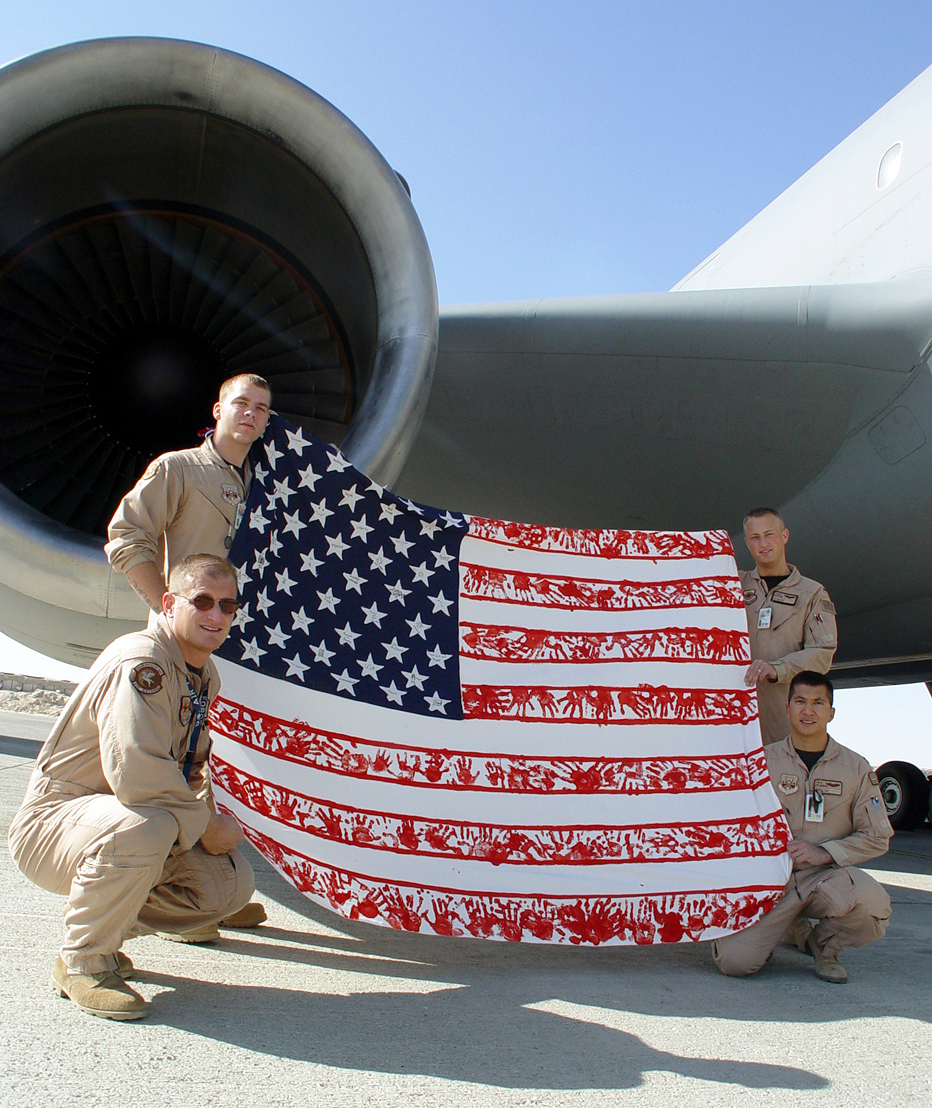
Flag of hope

OPERATION ENDURING FREEDOM -- (Clockwise from left) Staff Sgt. C.D. Schmeid, Airman 1st Class Dustin Sharpmack, 1st Lt. Trace Dotson and Capt. Troy Panon display an 86-by-76-inch handmade American Flag. The one-of-a-kind flag was designed and created by Iowa school students as part of the